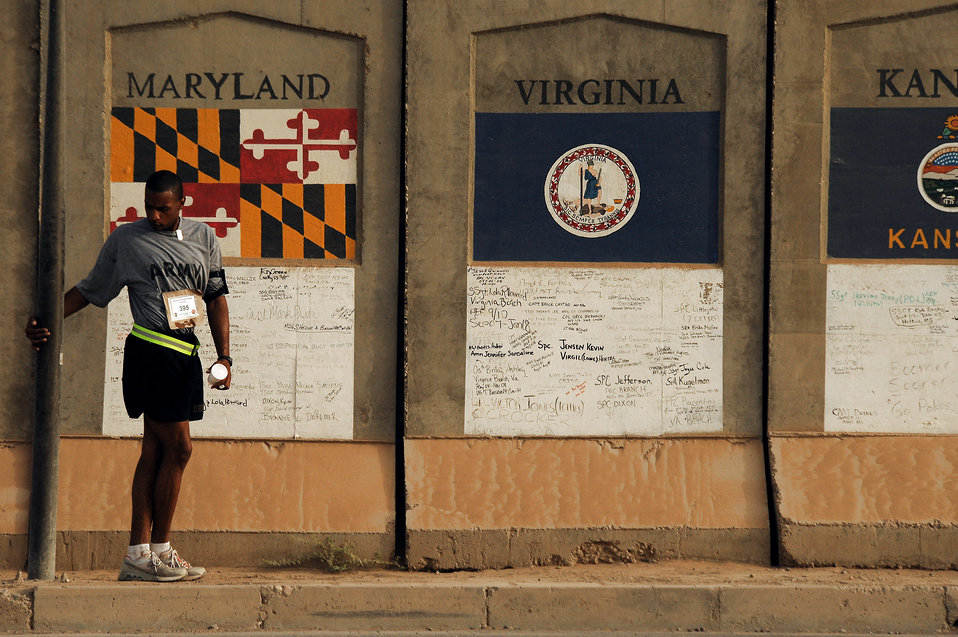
Servicemembers take part in Baghdad Boilermaker

A participant stretches in preparation for the first Baghdad Boilermaker 15-kilometer race June 13 at Sather Air Base, Iraq. The race was organized by Master Sgts. James Carrabba and Jeffrey Conant who have both participated in the Utica, N.Y., Boilermaker for years.